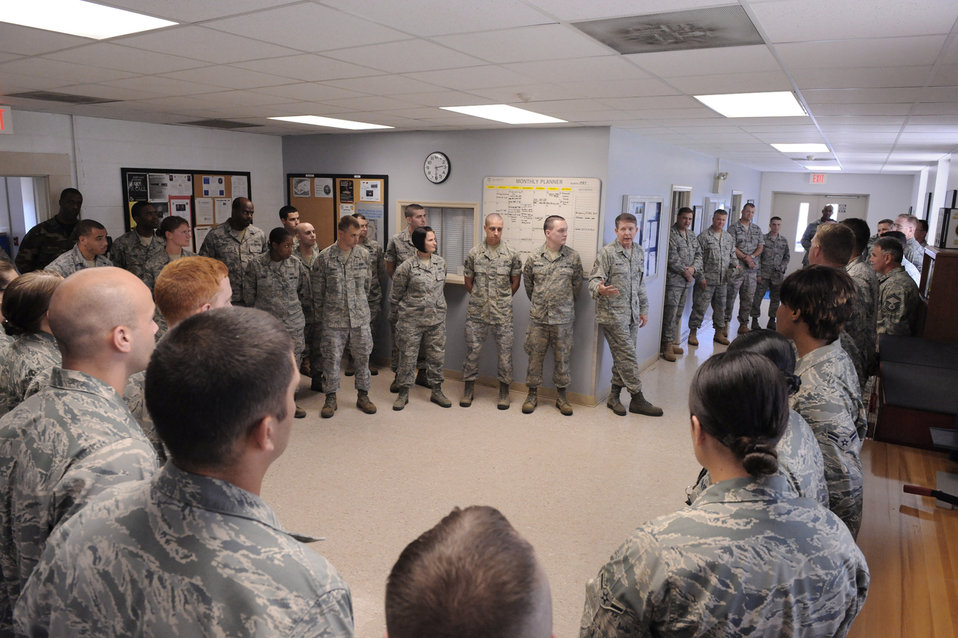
CMSAF visits Seymour Johnson

Chief Master Sgt. of the Air Force Rodney McKinley speaks to a group of Airmen in the aircrew flight equipment building on Seymour Johnson Air Force Base, June 12. As CMSAF, Chief McKinley represents the highest level of enlisted leadership for Airmen.